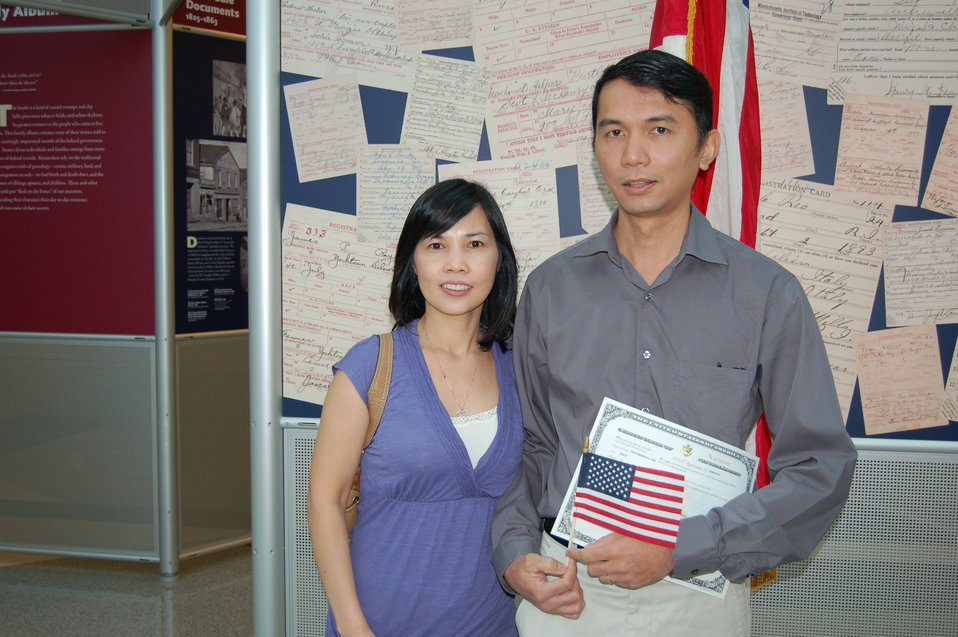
New Citizens